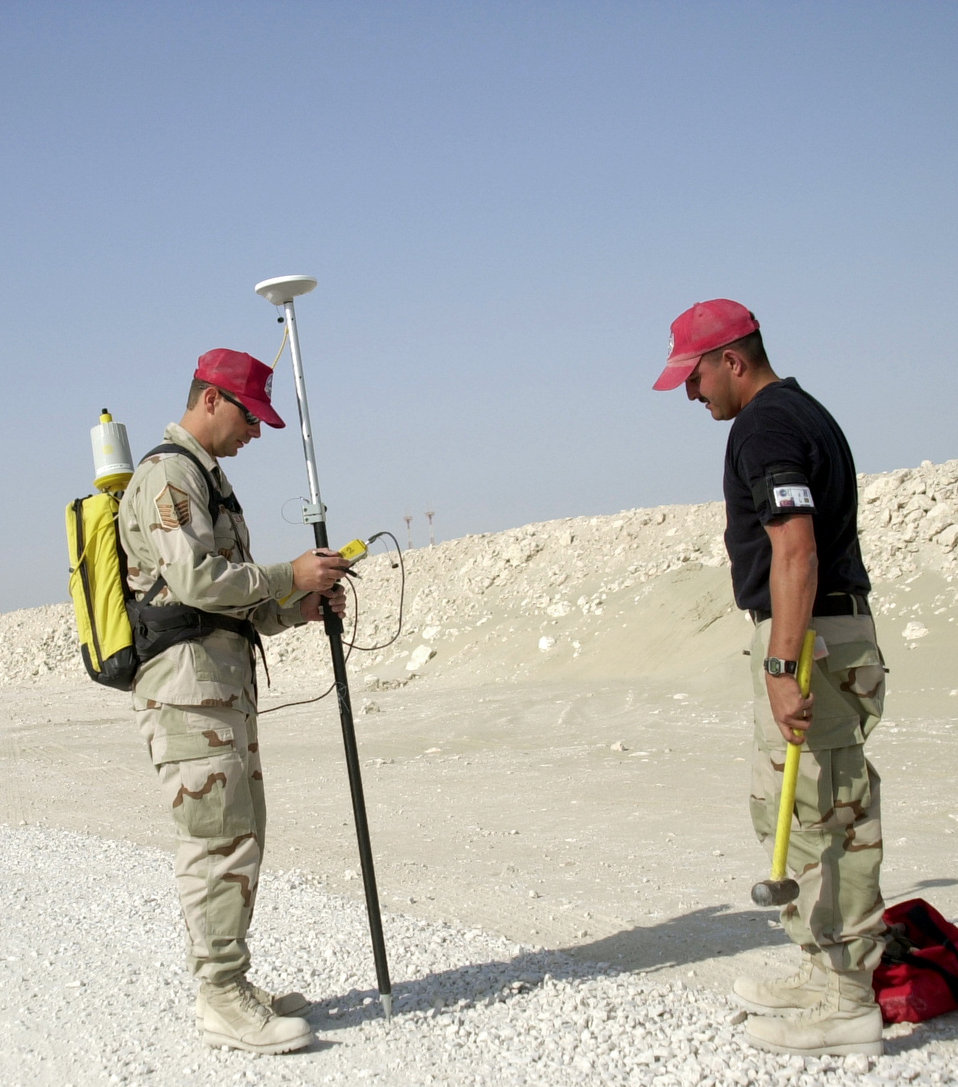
Horsing around

SOUTHWEST ASIA -- Master Sgt. Shawn Bennett (left) and Staff Sgt. Eric Simms conduct an interior roads project survey. Bennett is the noncommissioned officer in charge of development, and Simms is a heavy equipment operator. Both are assigned to the 1st Expeditionary Red Horse Group. The group is building facilities and putting in roads at a forward-deployed location.